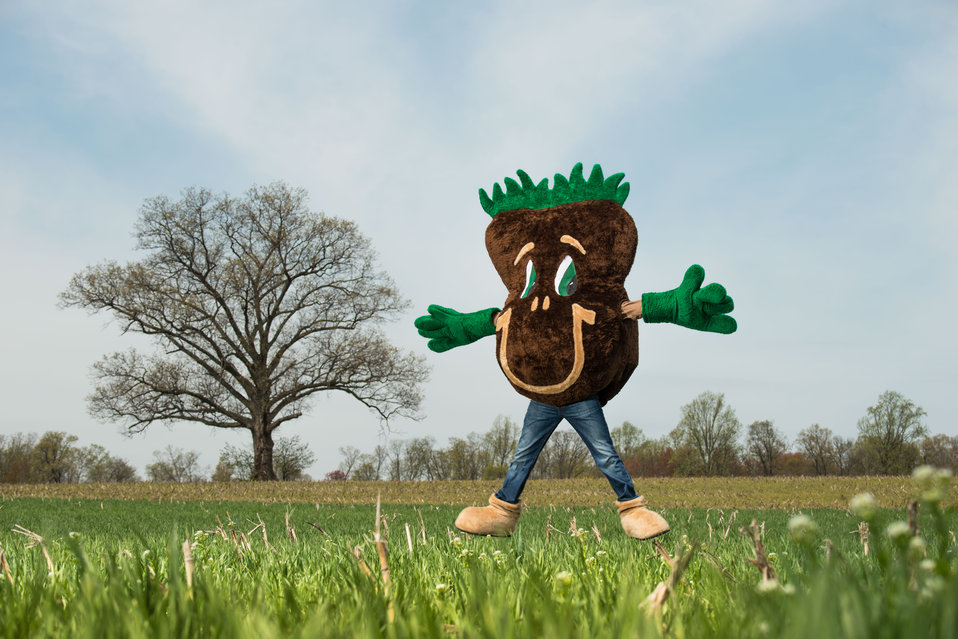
The U.S. Department of Agriculture’s (USDA) Natural Resources Conservation Service (NRCS) mascot Sammy Soil on the Sunny Ridge Farm in Laytonsville, MD on Monday, Apr. 28, 2014. The Sunny Ridge Farm owned by the Stabler family uses a number of conservation practices to promote soil health and water quality. No-till cropping systems use cover crops that help water soak deep into the soil and machines work lightly on top of the soil preserving vertical pores that are water’s pipeline to the roots. Cover crops prevent erosion, improve soil health, hold water, supply nutrients, and suppress weeds and pests. Fenced waterways keep livestock away from the streams and drainage to low points of fields, which allows grass, trees and other vegetation to grow. The plants take up nutrients from the livestock effluent, reducing pollution to waterways. The farm also has a well-designed agrichemical facility for an environmentally safe area to handle and store tanks of on-farm chemicals.